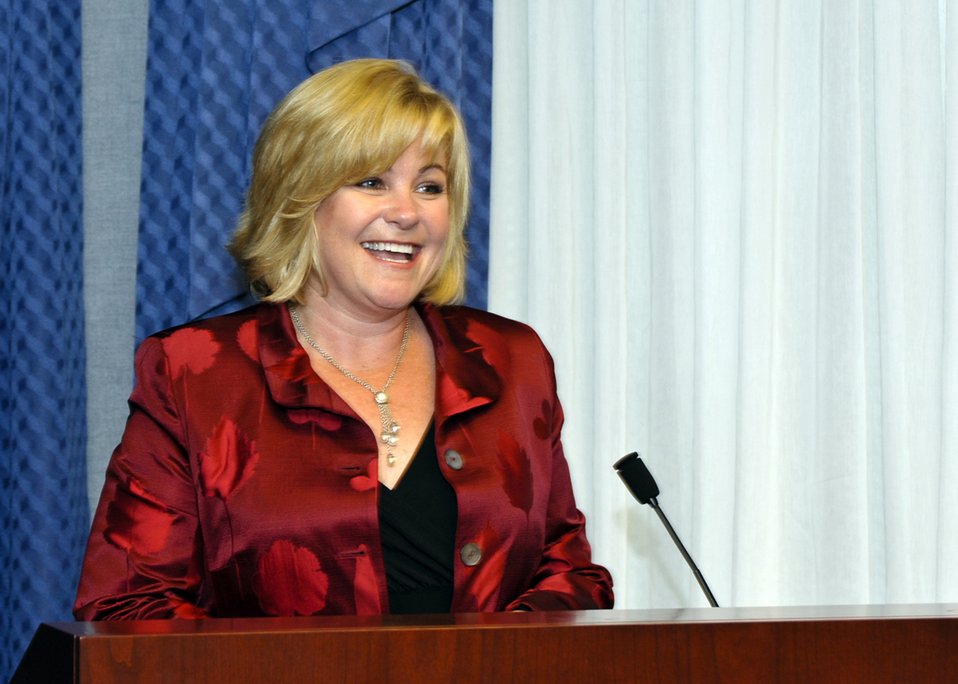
O'Malley Award

Sharon O'Malley Burg, daughter of the late Gen. Jerome and Diane O'Malley, provides some remarks during the presentation of the 2009 General and Mrs. Jerome O'Malley Award to Brig. Gen. Brett and Marianne Williams at a ceremony in the Pentagon Sept. 11, 2009. The award was established after General and Mrs O'Malley, who were known for their leadership and contributions to Air Force families and communities, were killed in a plane crash in 1985.